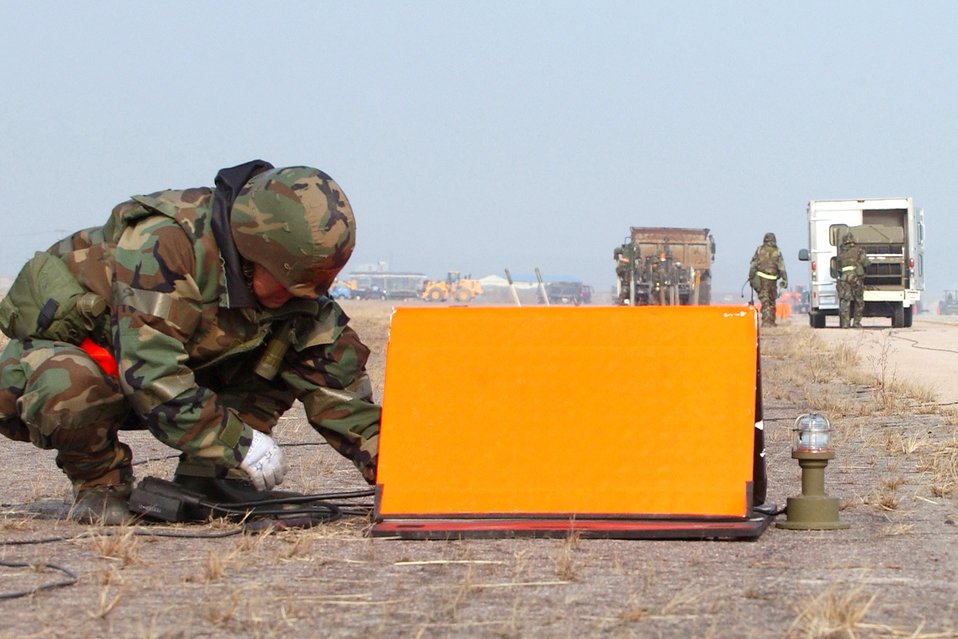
Keeping the runway in tip-top shape

Airmen from the 8th Civil Engineer Squadron airfield damage repair team install temporary runway lighting Feb. 21 during an operational readiness exercise at Kunsan Air Base, Korea. ADR teams do everything from crater repair to airfield lighting making it possible to get aircraft back in the air quickly.